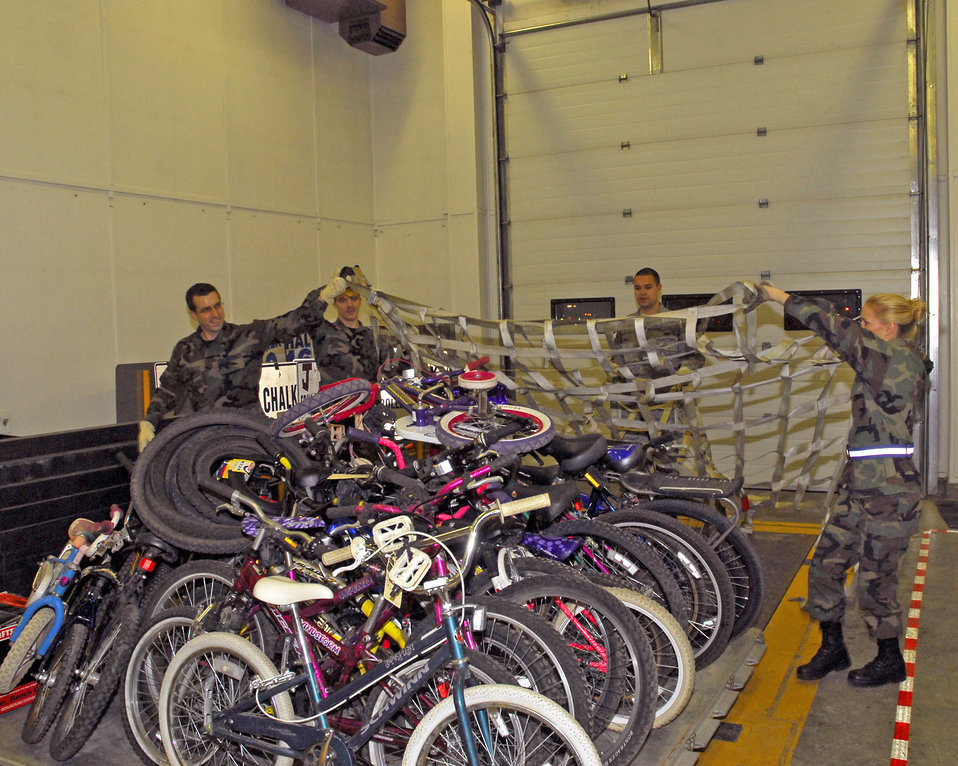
Bicycles to Afghanistan

(Left to right) Alaska Air Guardsmen Staff Sgt. Woody Miller, Senior Airman John Darnall, Senior Airman Ryan Pierce and Tech. Sgt. Summer Rehak from the 176th Logistics Readiness Squadron pulls a top net over a pallet of refurbished bicycles on December 6, 2009. The bikes will be airlifted to Afghanistan to be given to disadvantaged children.